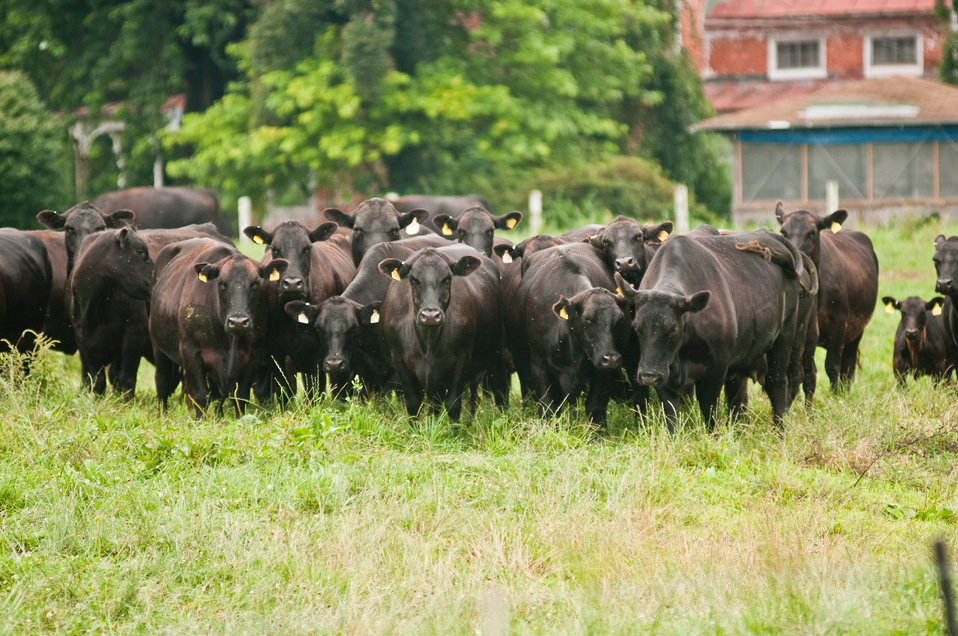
Black Angus cows and calves graze organic pastures, and for added nutrition and variety, they enjoy a daily feeding of sweet silage at Nick’s Organic Farm, owned by Nick Maravell, in Adamstown, MD on Friday, July 12, 2013. The white plastic wrapped bales of pasture grass and alfalfa have been fermenting for months to create sweet silage that stores well and can be used to feed cattle at varying amount all year long. The fermentation process sweetens the taste and increases the vitamin levels. The farm produces Black Angus beef, chicken, turkey, eggs, hay, soybeans, corn, alfalfa, orchard grass, rye; and other crops. The cattle are 100% grass-fed receiving certified organic pasture, certified organic hay (in winter), water and mineral salts mixed with sea kelp. The cattle are not fed hormones, antibiotics or animal products. Poultry feed from grain is ground from organic grain. The poultry also graze on organic pastures. The farm has conducted on-farm research with federal, state and non-profit agencies to refine organic practices. An organization such as the U.S. Department of Agriculture (USDA) Agricultural Research Service (ARS) center in Beltsville has been able to conduct research to improve organic crops and to breed and manage the cattle so that they have.